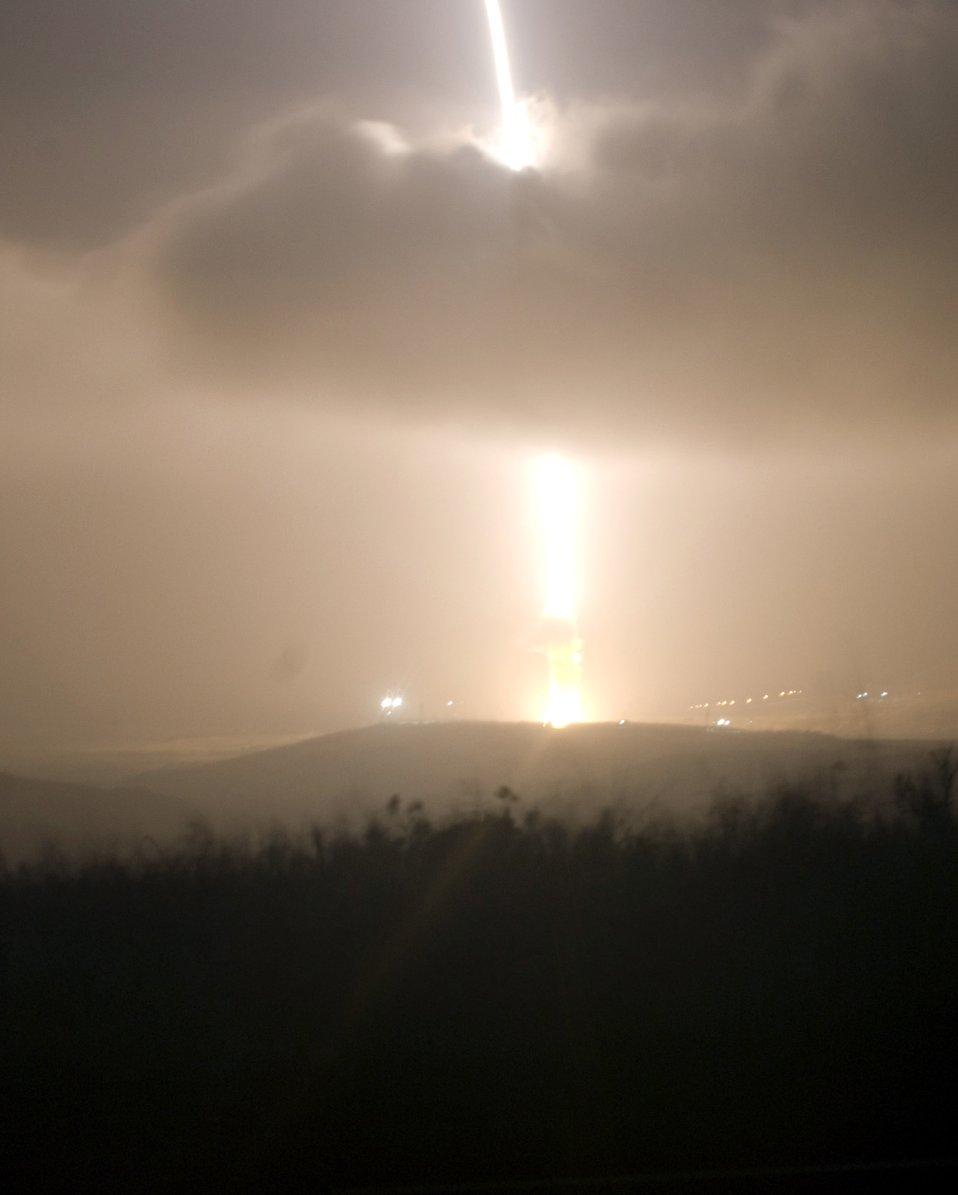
Vandenberg missile launch successful

A Minuteman III intercontinental ballistic missile configured with a National Nuclear Security Administration joint-test assembly launches May 22 from North Vandenberg Launch Facility-10 at Vandenberg Air Force Base, Calif. The launch was an operational test to determine the weapon system's reliability and accuracy. The missile's single unarmed re-entry vehicle traveled approximately 5,250 miles before hitting its pre-determined target in a broad ocean area 230 nautical miles southwest of Guam.